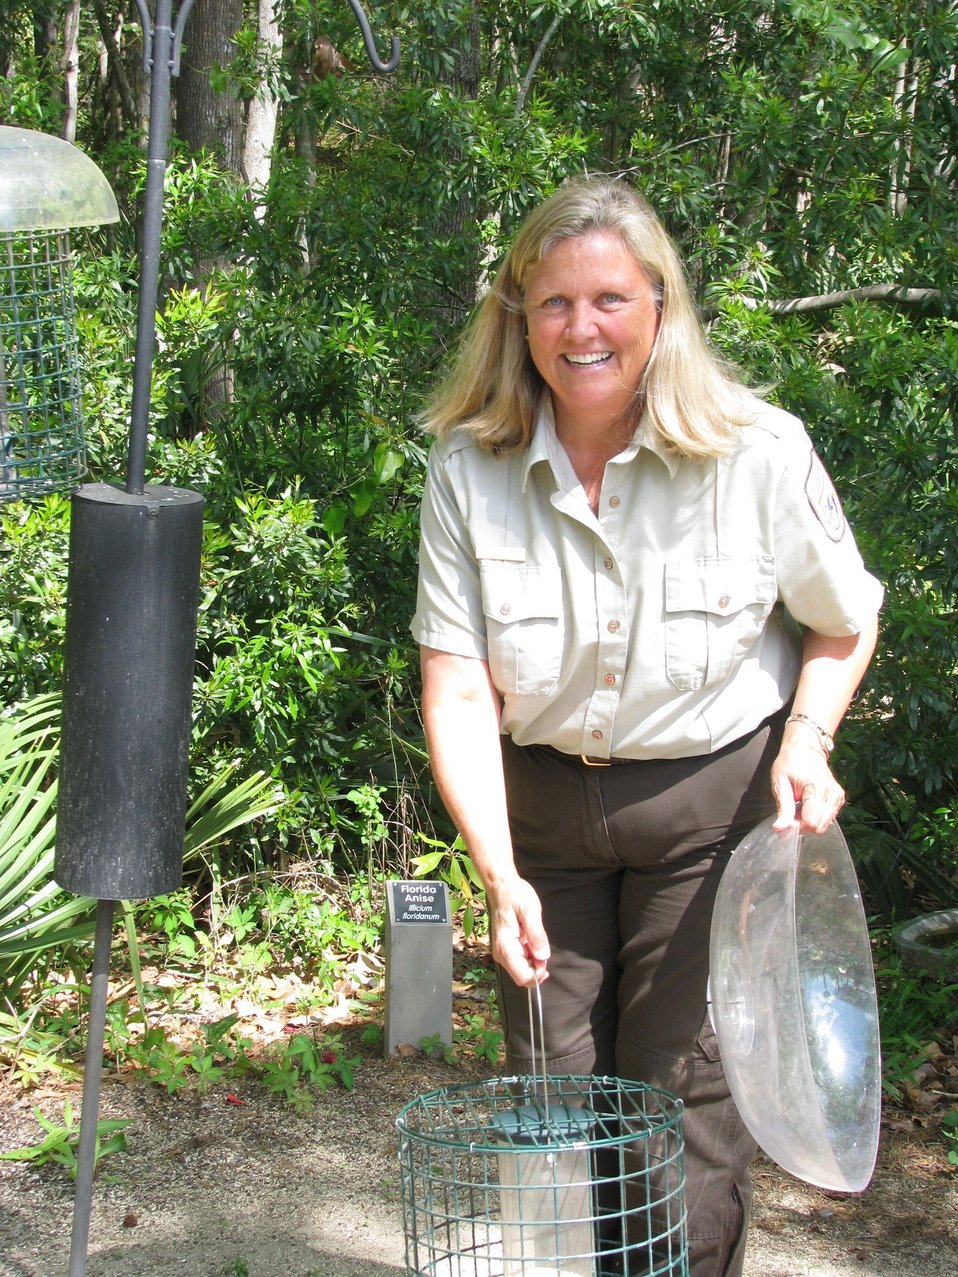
Jane Griess at Savannah Wildlife Refuge, 2

Jane Griess, manager of Savannah National Wildlife Refuge and the six other refuges along the South Carolina and Georgia coasts, says she first learned her love of nature at the feet of her mom, Margaret Griess. “She even gave me my own caterpillar cage for my birthday one year,” says Jane.